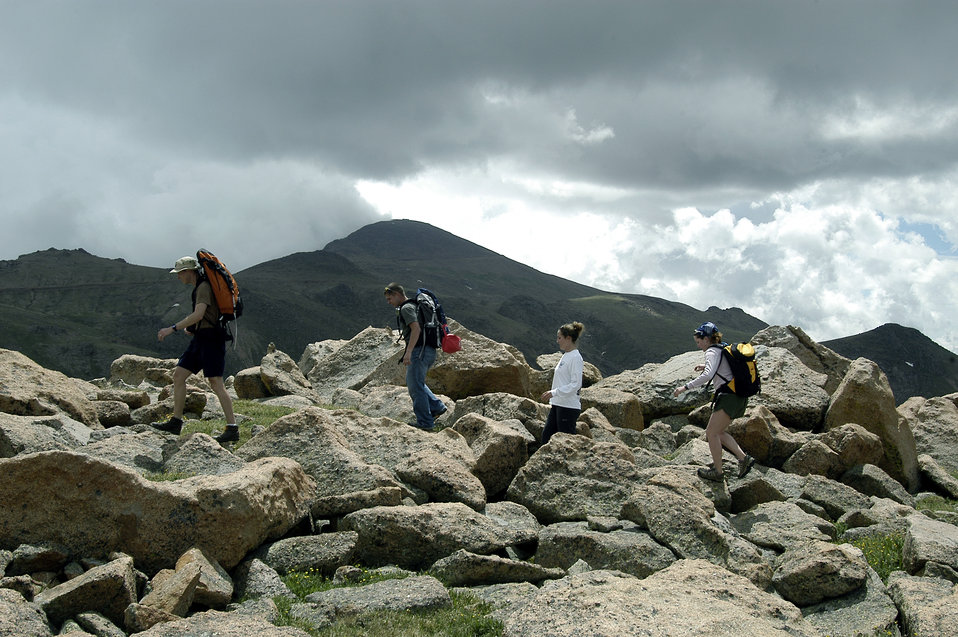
At the playground

PIKES PEAK, Colo. -- Capt. Leon Travis leads research assistants Army Pfc. Jesse Udy and West Point cadets Laura Greczyn and Amy Rutkowske on a five-mile hike near Devil's Playground. Captain Travis is a volunteer in an Army/Air Force altitude research study. The captain and 17 other Airmen are living on the summit of Pikes Peak this summer to gauge how the body reacts to living and exercising in a high-alpine environment.